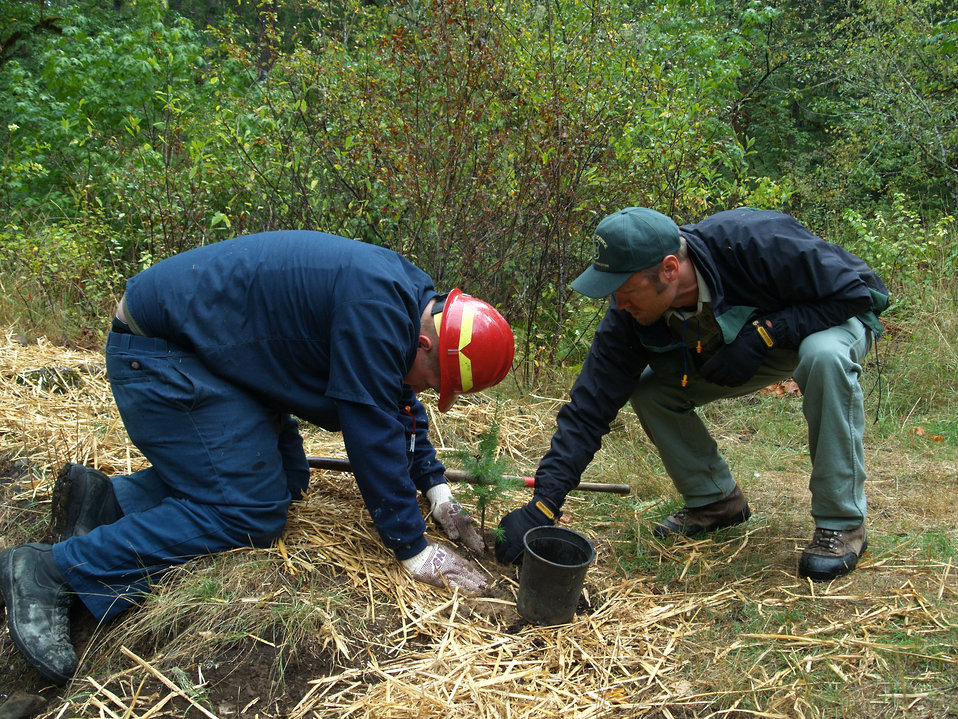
September 29, 2009. Estacada, OR. Timber Lake Job Corps Center student Cody Goff (l) plants a seedling while crew boss Brian Hickman (r) supervises during a streamside restoration project on the Clackamas River. The project enhances the spawning areas of native salmon on the river.